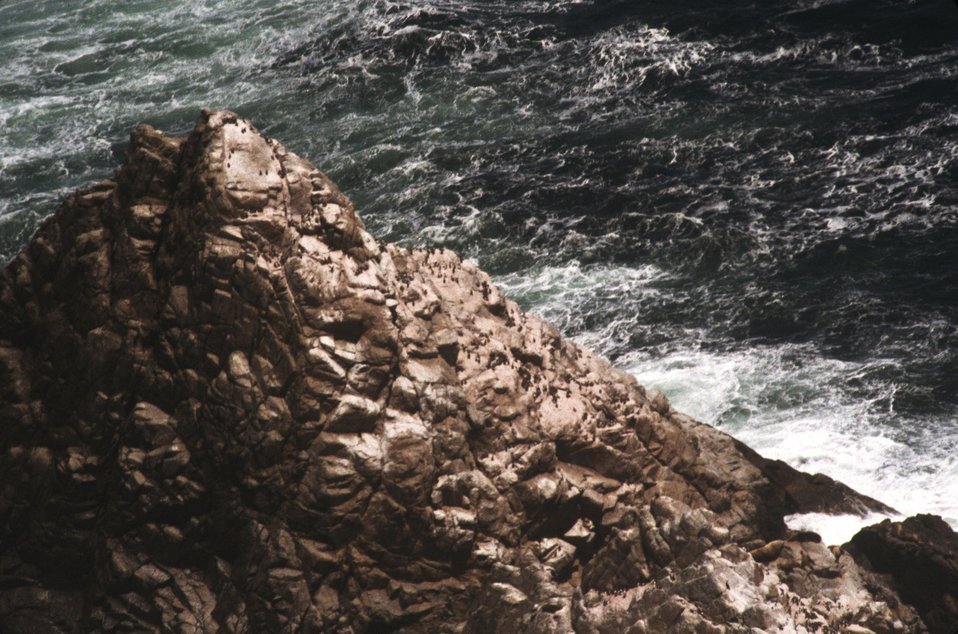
Sculpted rocks of the Farallons with murre colony. A symphony of sea, wind, and rock.